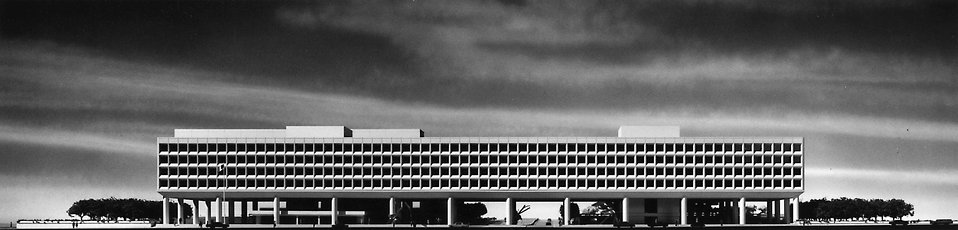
Federal Office building No. 5 Washington DC